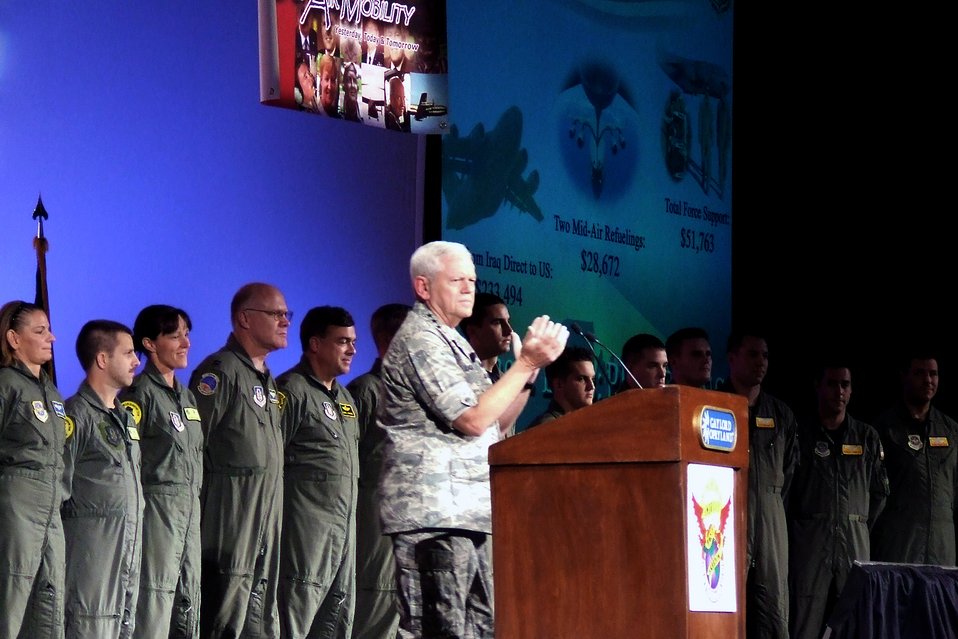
AMC Commander highlights air mobility warrior successes during 2007 A/TA Convention

Gen. Arthur J. Lichte, Air Mobility Command commander, applauds aircrew personnel during his presentation at the 2007 Airlift/Tanker Association Convention in Nashville, Tenn., Oct. 27. The aircrew was responsible for an aeromedical evacuation mission which saved the lives of two Army soldiers.